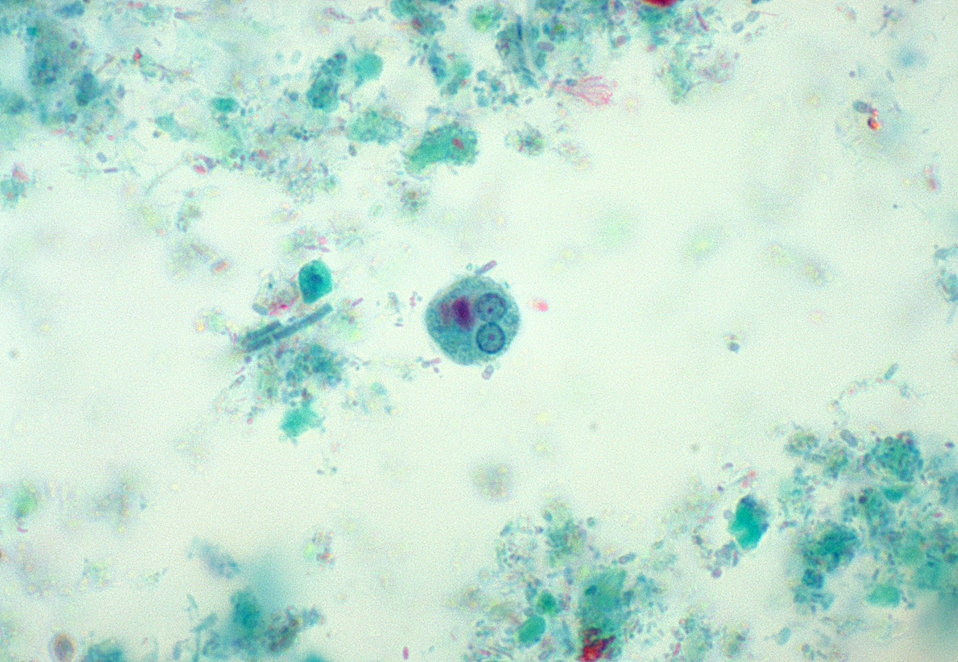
This photomicrograph depicts a binucleated cyst of the amoebic parasite, Entamoeba histolytica.